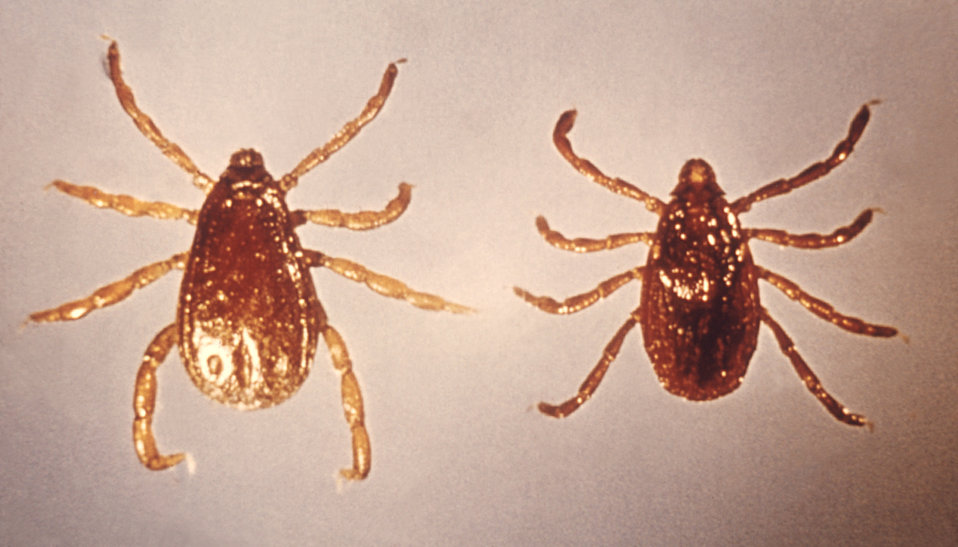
These two 'brown dog ticks', Rhipicephalus sanguineus, have been implicated in the spread of Q Fever.